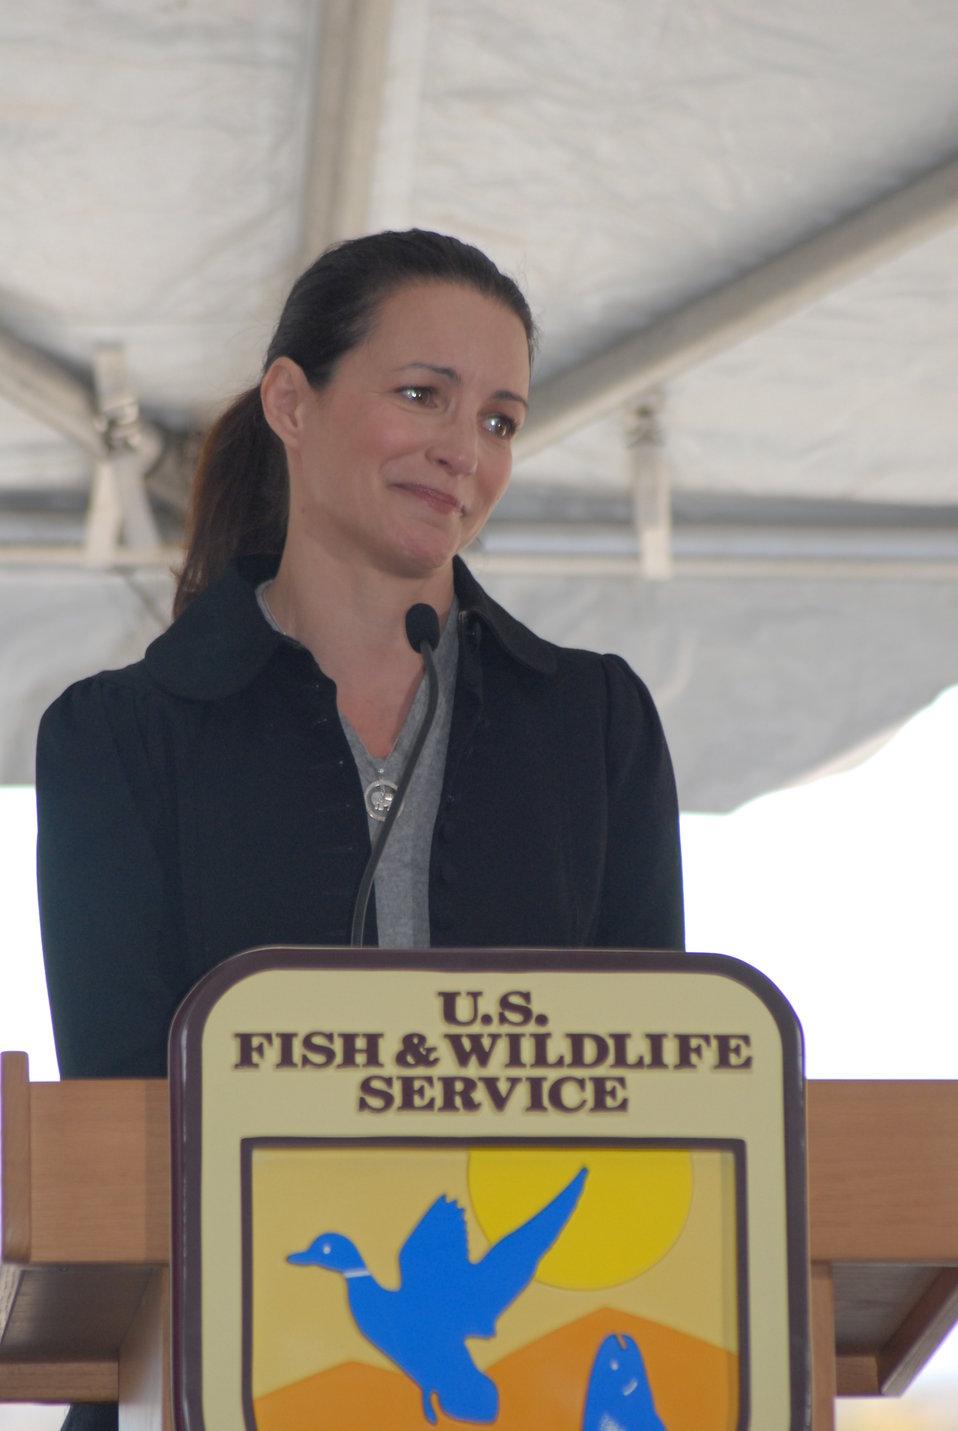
Kristin Davis, actress and Patron for The David Sheldrick Wildlife Trust, speaks at the U.S. Ivory Crush.